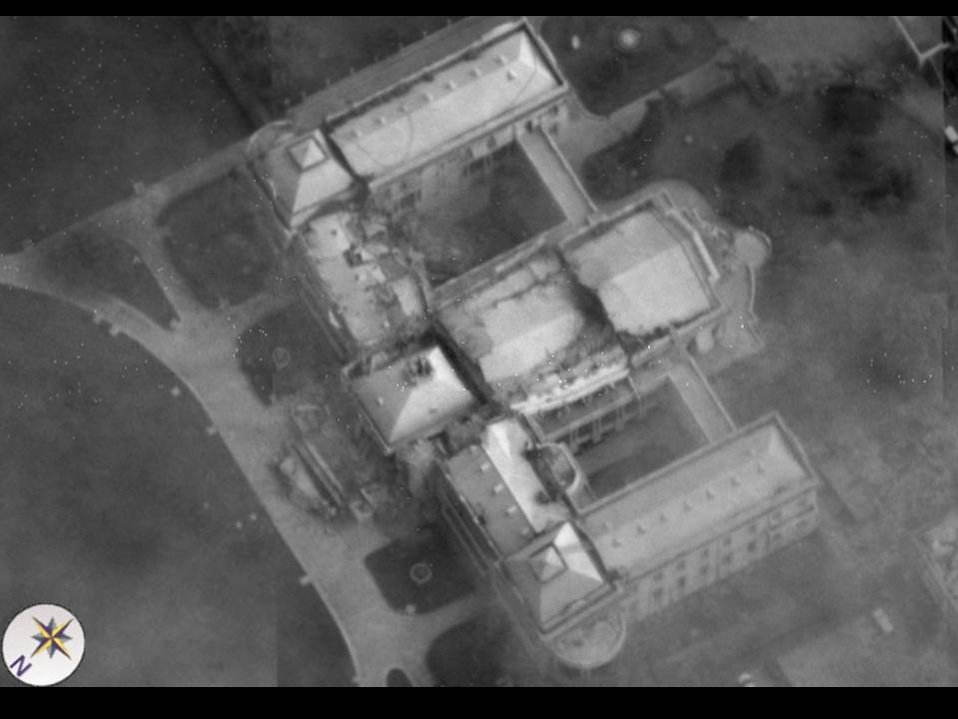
Global Hawk over Haiti

An aerial view of the damaged Presidential Palace in Haiti from an Air Force Global Hawk unmanned aircraft Jan. 14. Aerial images are providing planners valuable situation awareness as they coordinate U.S. military support to the Haiti relief effort.